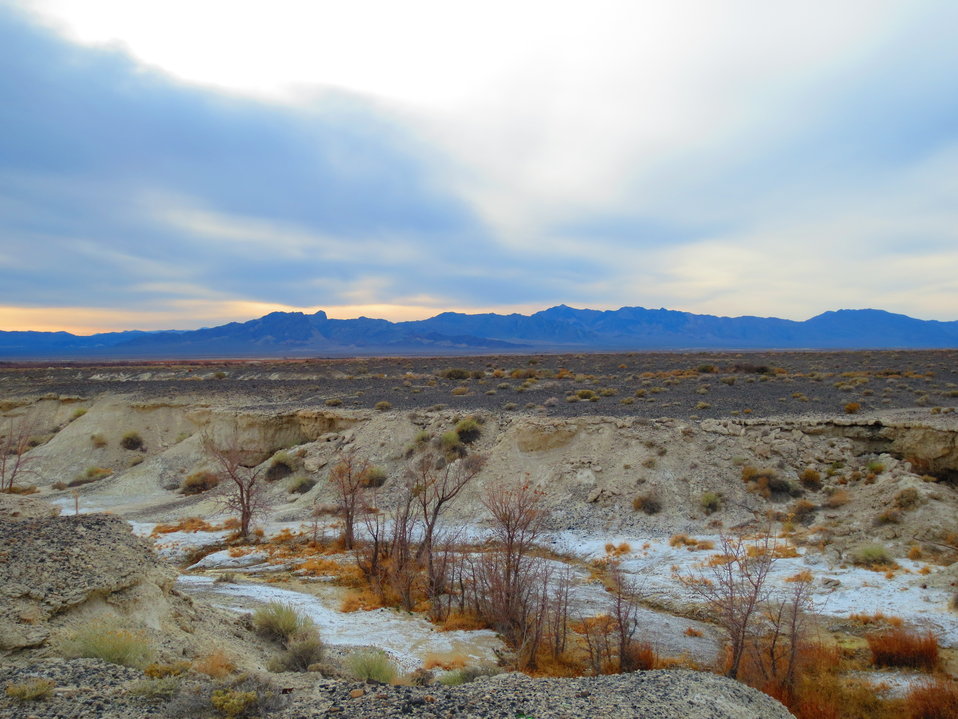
Sunset at Collins Ranch Area

This portion of Ash Meadows NWR was once home to bootleggers that used spring water to make illegal whiskey.